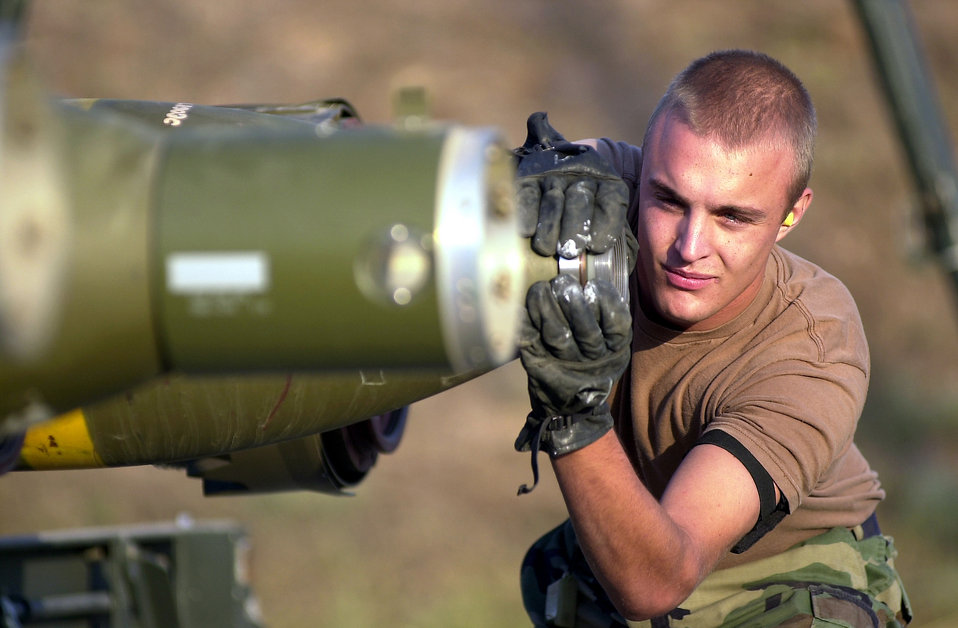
Secure fittings

INCIRLIK AIR BASE, Turkey -- Airman 1st Class Joe D’Antonio, who is deployed here from the 31st Maintenance Squadron at Aviano Air Base, Italy, double checks fittings to ensure they are correct and secure, while installing a collar adapter that will hold a precision guidance system in support of Operation Northern Watch.